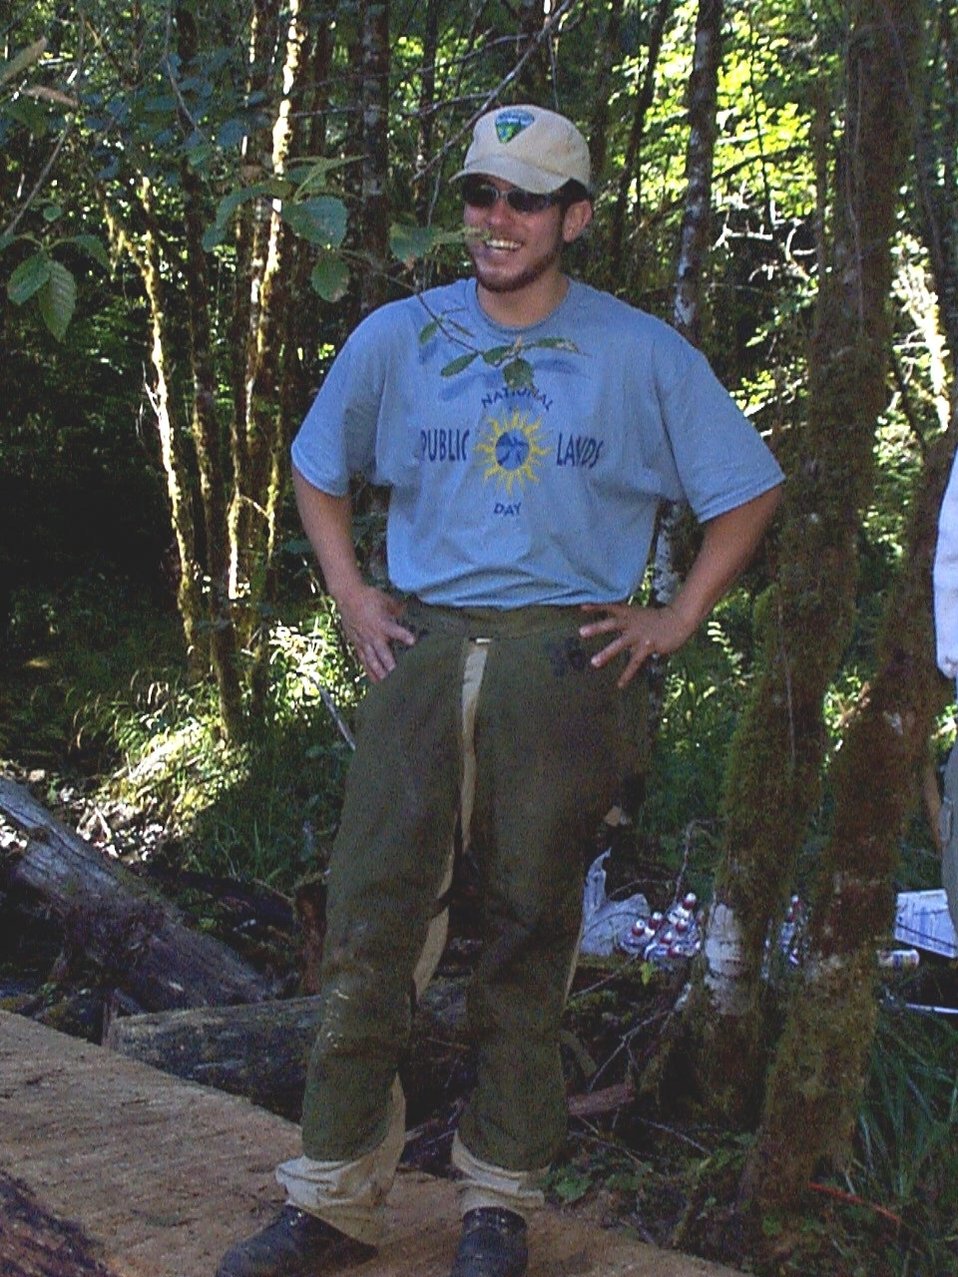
Proud volunteer looks at his accomplishments.